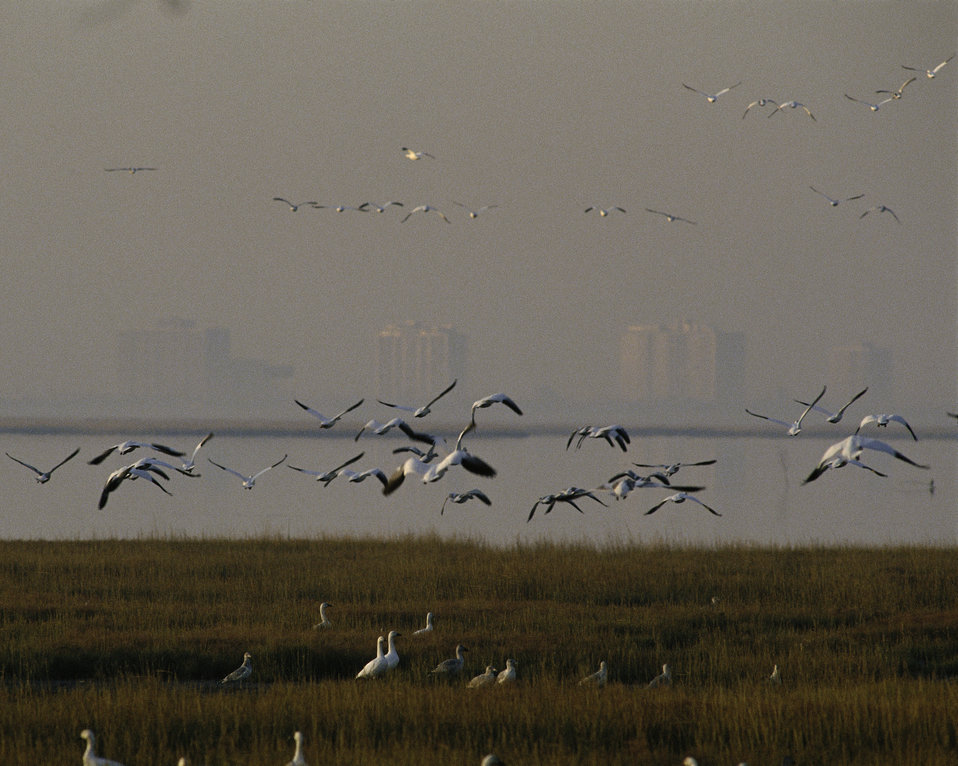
Photo of the Week - Edwin B. Forsythe National Wildlife Refuge (NJ)

Photo of the Week - 3/24/10

Edwin B. Forsythe National Wildlife Refuge in New Jersey.